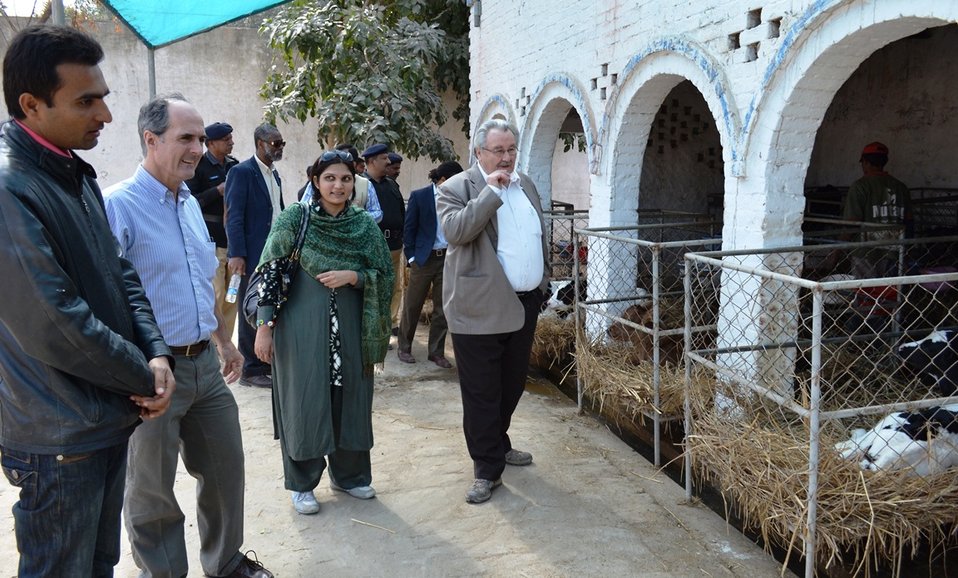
USAID Punjab team taking a tour of the Nestle Sarsabz demonstration dairy farm in Okara, where USAID-DRDF Dairy Project's farmer trainings are held.